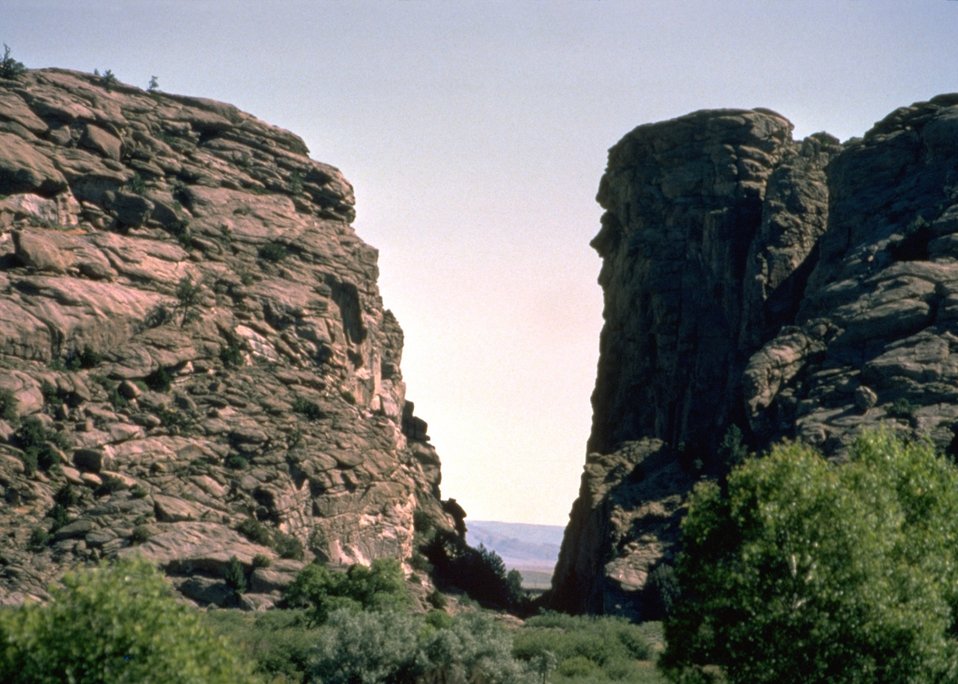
Devil's Gate historic site, Rawlins Field Office.